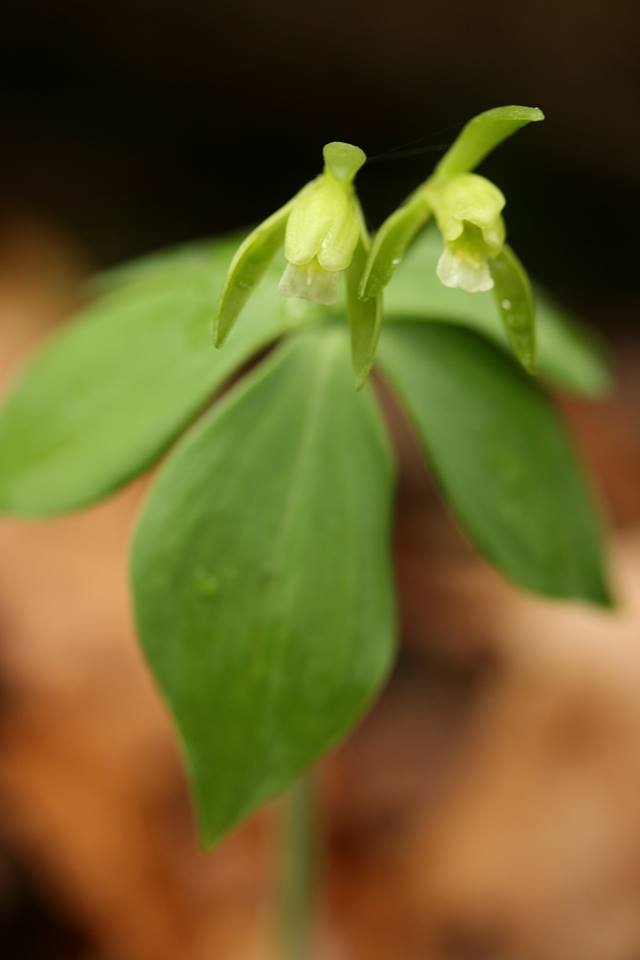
Photo of the Week - Small-whorled (RI)Pogonia

Photo of the week - 7/29/13

Our friends at USFWS Endangered Species are spotlighting species in Rhode Island this week. This is the small-whorled pogonia, one of the rarest orchids in the east. Check out bit.ly/13AKYB3 to see how we are working to protect this rare flower.